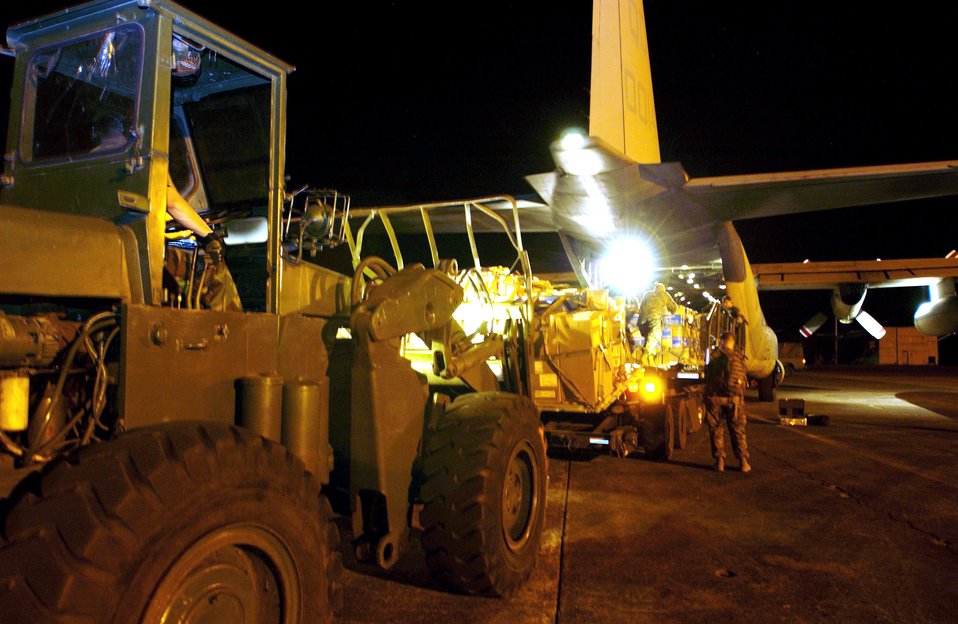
Philippine humanitarian relief

CLARK AIR BASE, Philippines (AFPN) -- U.S. servicemembers load a C-130 Hercules with humanitarian supplies Feb. 19. More than 2,000 U.S. and Philippine troops are working together to assist in the humanitarian relief efforts for victims of the Feb. 17 landslide in the village of Guinsaugon on the island of Leyte, Philippines.